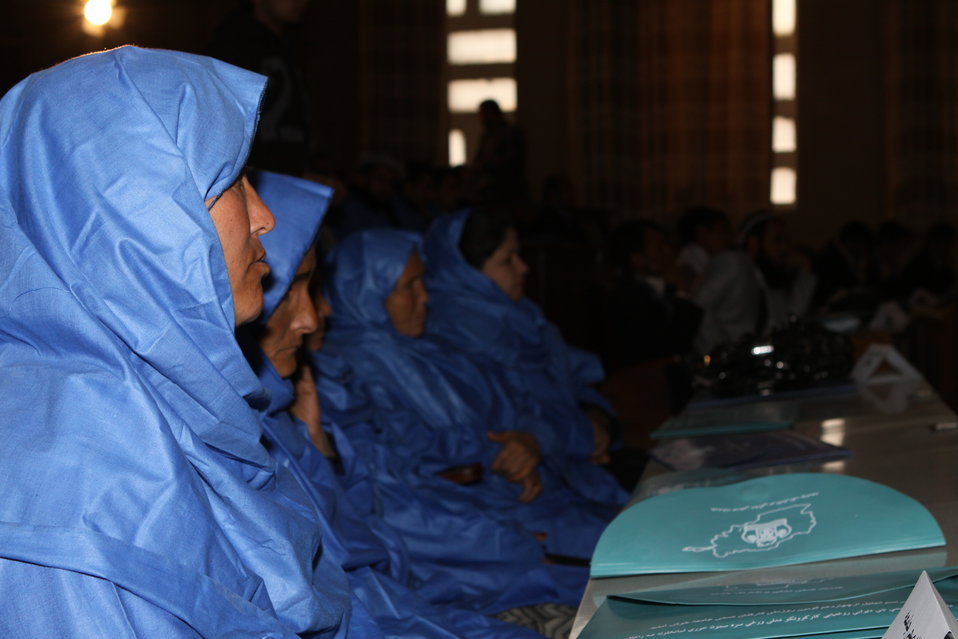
Community Health Workers Celebrated

Kabul, Afghanistan | December 5, 2010 — In support of the United Nations designated International Volunteer Day for Economic and Social Development, Afghanistan’s Ministry of Public Health celebrated its annual Community Health Worker Day today. Acting Minister of Public Health Dr. Suraya Dalil, USAID Senior Deputy Mission Director Robert Hellyer, other government officials, and international donors joined in recognizing the critical contribution of community health workers in Afghanistan and encouraging them to continue their voluntary support to their communities.
The event praised the contributions of the more than 22,000 volunteers throughout the country who deliver community level health-education, counseling, and services out of village health posts located in private homes. The Ministry of Public Health envisioned that community-based healthcare programs will actively encourage communities and families to adopt healthy lifestyles and behaviors, and provide families access to high quality and socially acceptable preventative medicine and life-saving services.
“We have 22,000 community health workers in Afghanistan that are able to implement the basic and standard medicines. They all have been trained through a job description,” said Minister Dalil. Addressing the health workers, she added, “I am proud and feel powerful that I have people like you.”
USAID-funded health projects collaborate closely with the Ministry of Public Health to improve the health and nutritional status of Afghans, provide quality primary healthcare, and promote healthy behaviors at the community and household-levels. USAID supported the training of more than 9,000 of the volunteer community health workers currently working in Afghanistan.
“On behalf of the American people, I congratulate the Community Health Workers for their diligence to gain the skills and knowledge necessary to serve their communities in this important role,” said USAID Senior Deputy Mission Director Hellyer. “USAID strongly supports community based health care and believes that quality community-based health services are essential to reaching Afghanistan’s Millennium Development Goals.”
To support the Basic Package of Health Services, USAID assisted in developing the community health worker training manual, helped train community health worker supervisors and master-trainers, facilitated in-service training, and produced and developed reporting tools, job aids, and education materials.